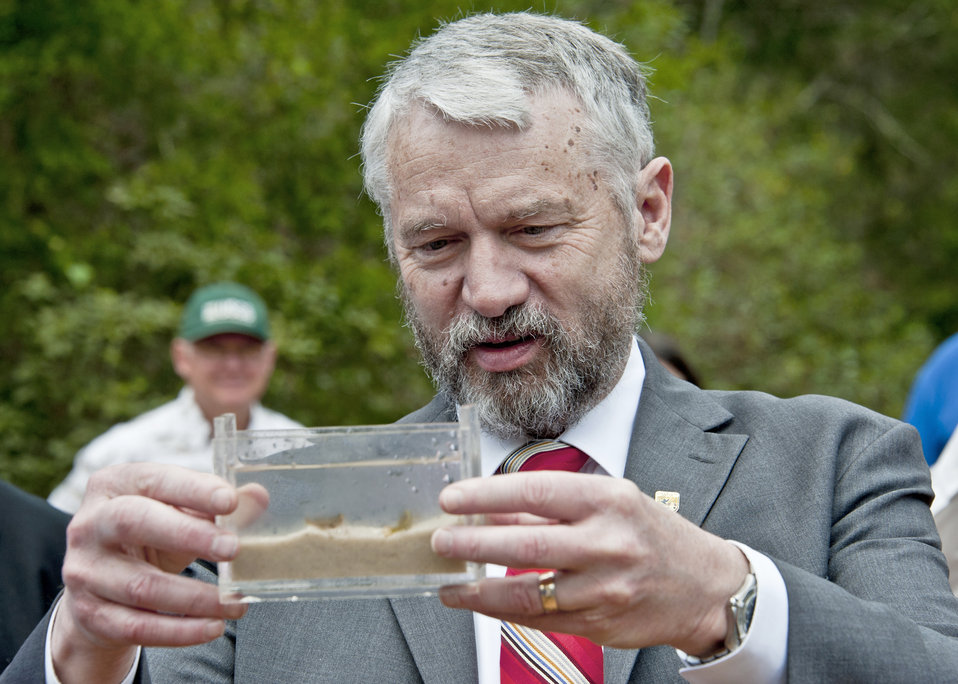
Eglin AFB threatened species

Rowan Gould takes a look at a container of Okaloosa darters March 28, 2011, at Eglin Air Force Base, Fla. The small fish, whose habitat is almost exclusively on the Eglin ranges, became the first fish on Defense Department land to be reclassified from